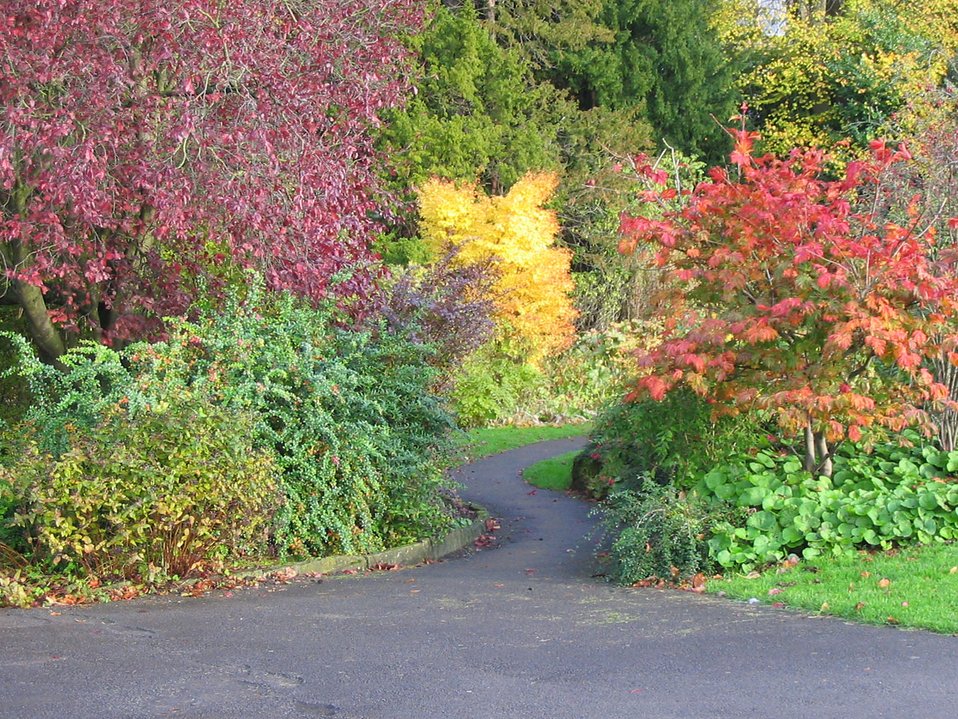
Autumn colours in valley gardens.